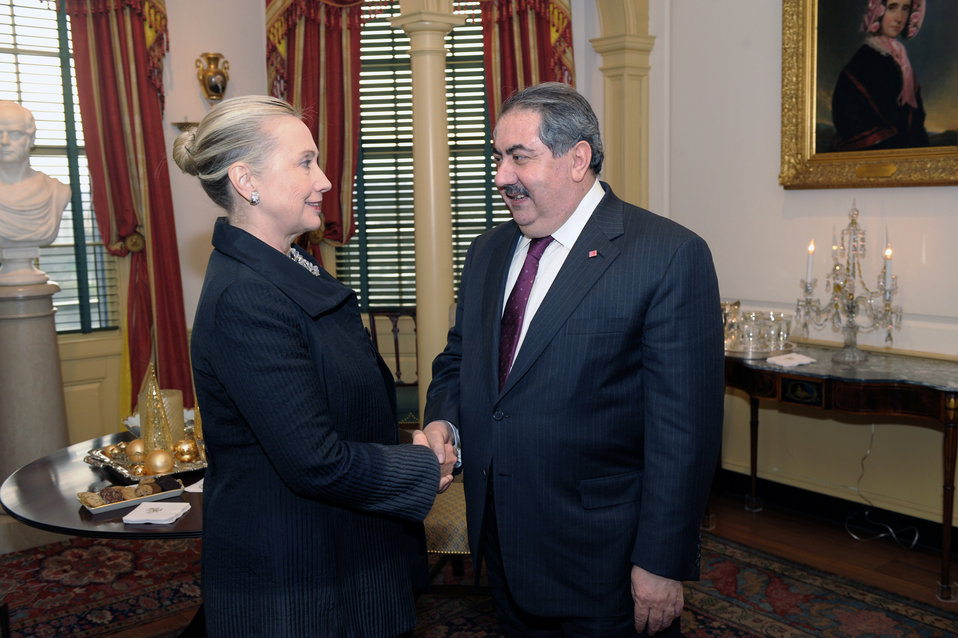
Secretary Clinton Meets With Iraqi Foreign Minister Zebari

U.S. Secretary of State Hillary Rodham Clinton meets with Iraqi Foreign Minister Hoshyar Zebari, at the U.S. Department of State in Washington, D.C., on December 12, 2011.